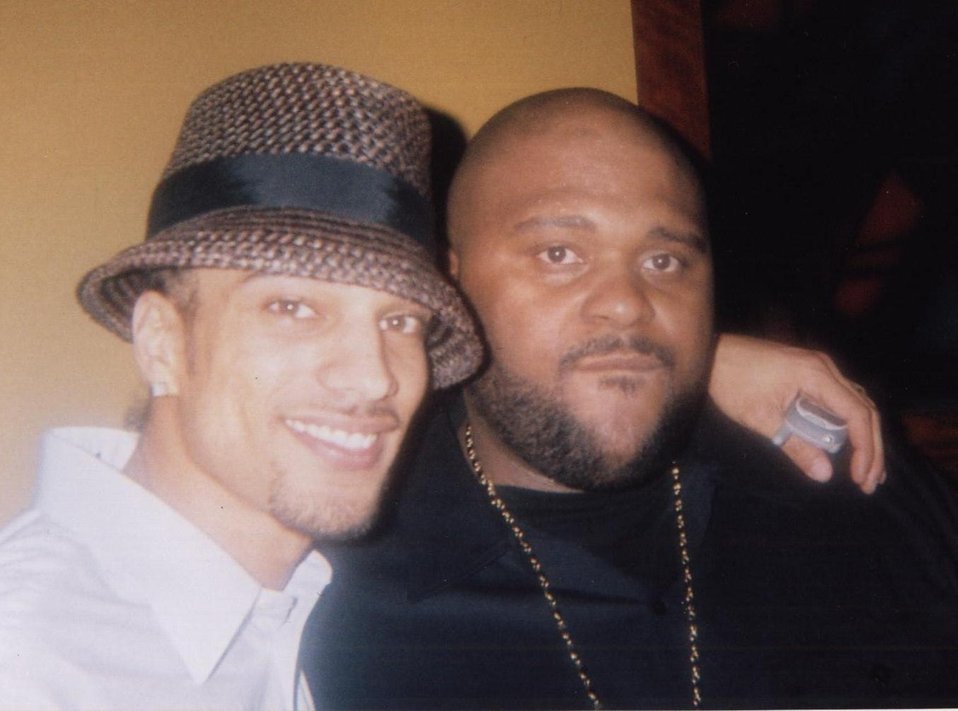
A photo I took of Corey Clark and Rueben Studdard